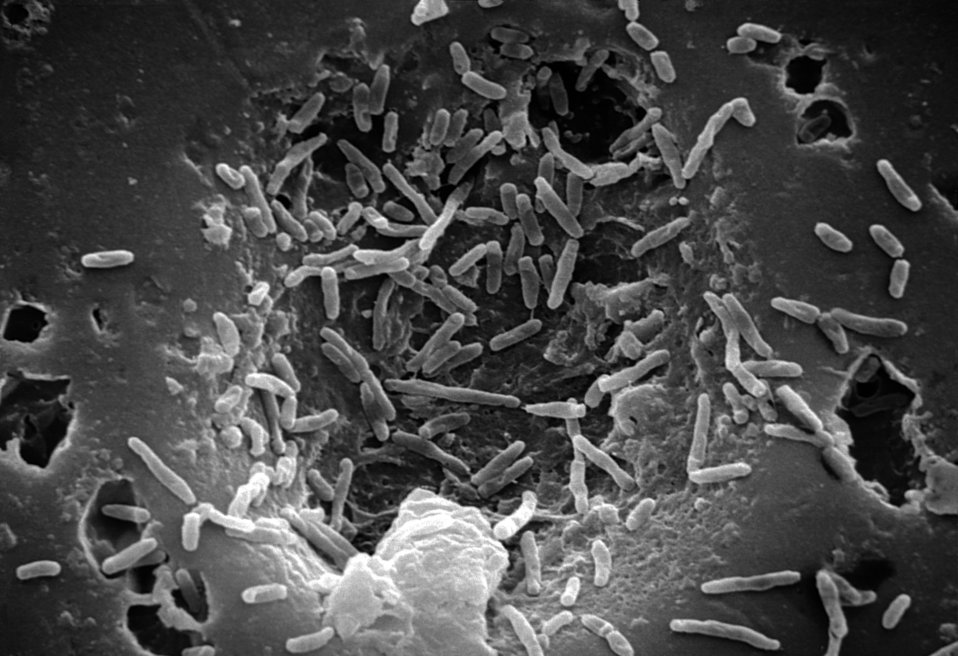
Scanning electron micrograph (SEM) of Mycobacterium chelonae bacteria.